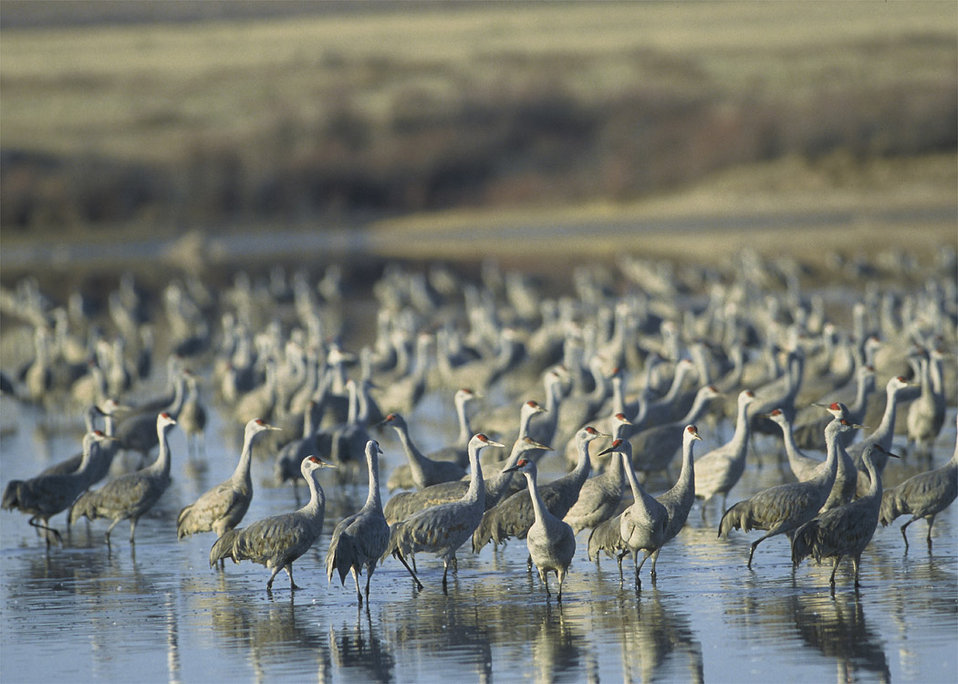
sandhill cranes

Muleshoe National Wildlife Refuge, TX